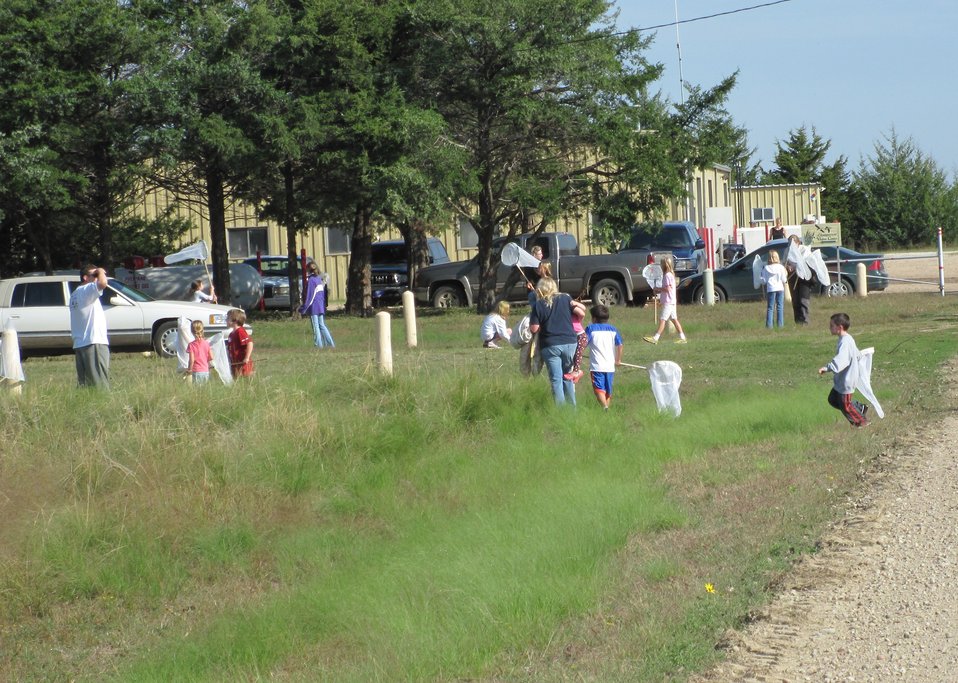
Quivira National Wildlife Refuge

Monarch Mania, a family event the Quivira NWR hosts each year, provides opportunities for children to learn about butterflies--maybe even catch one, too!